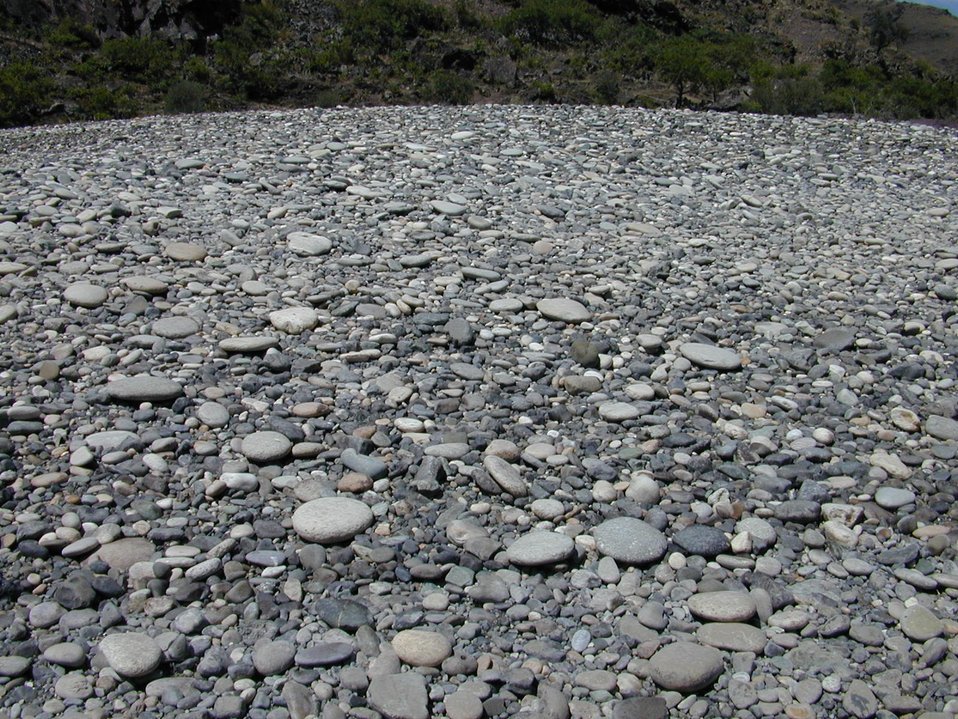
Rock imbrication along the Lower Salmon River Cottonwood Field Office UCSC Upper Columbia Salmon Clearwater District